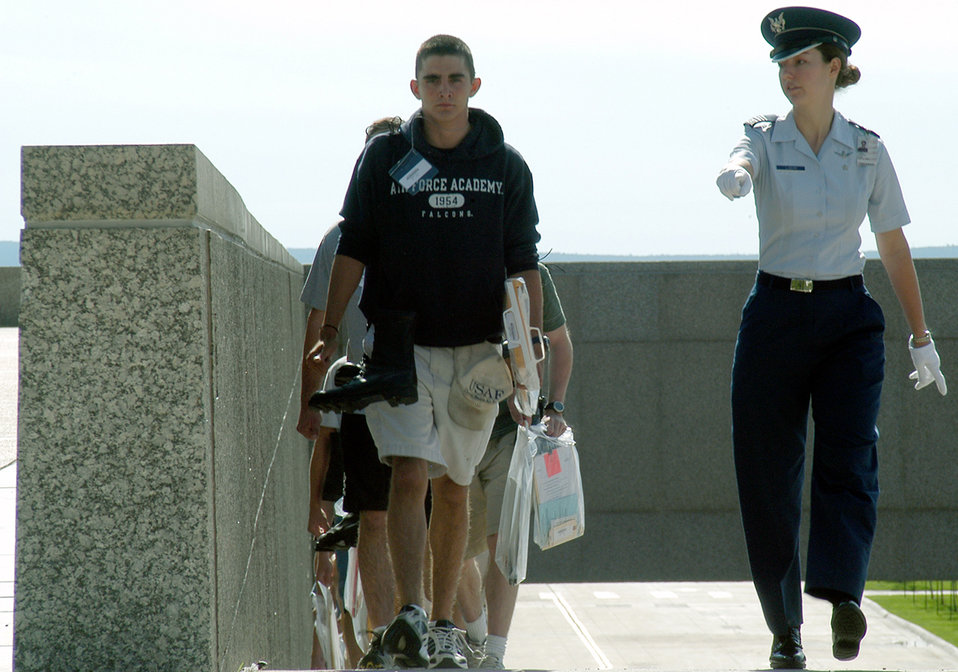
Class of 2008

U.S. AIR FORCE ACADEMY, Colo. -- Cadet 1st Class Jessica Loepp (right) delivers pointed commands to Basic Cadet Chad Rudolph as they march up the main ramp to the terrazzo here July 1. A new group of more than 1,300 appointees began their Air Force careers by enrolling in the Class of 2008.